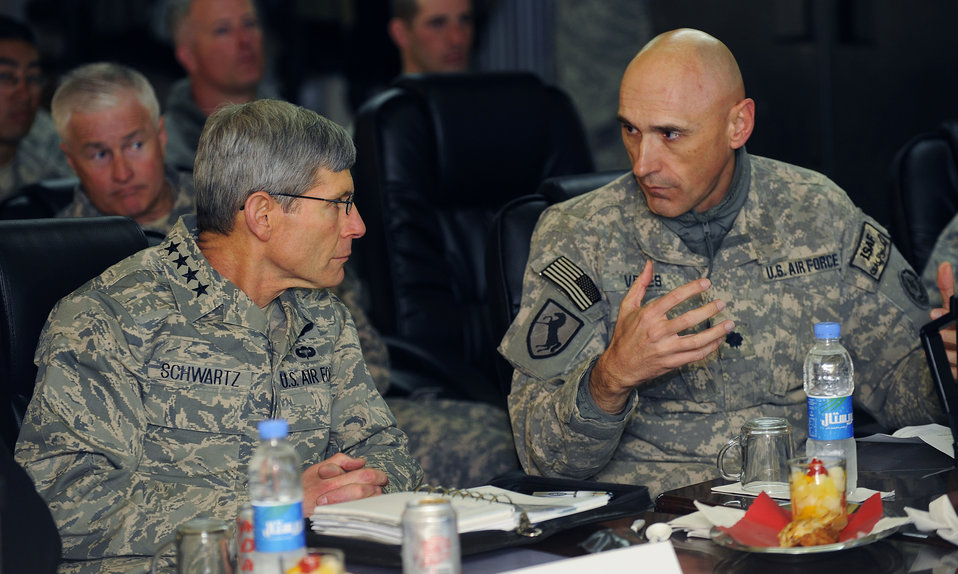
Air Force Chief of Staff visits PRT Zabul

Air Force Chief of Staff Gen. Norton Schwartz (left) receives a mission brief from Lt. Col. Andy Veres, the Provincial Reconstruction Team Zabul commander, during a visit Jan. 20, 2011, to Forward Operating Base Smart, Afghanistan. The visit was part of the general's trip to the U.S. Central Command area of responsibility.